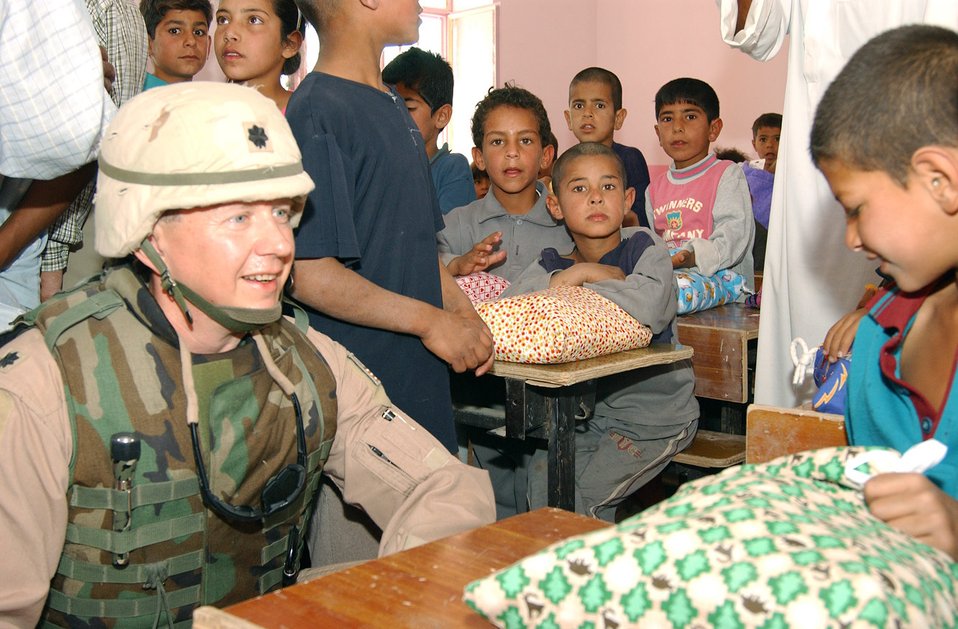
Gifts from America

BALAD AIR BASE, Iraq -- Lt. Col. Craig King talks with an Iraqi boy at a small village near here during a humanitarian mission. About 30 Airmen and Soldiers traveled to the village to hand out school supplies and toys to the children that had been collected by children from several schools in Florida. Colonel King is the 332nd Air Expeditionary Wing safety chief.